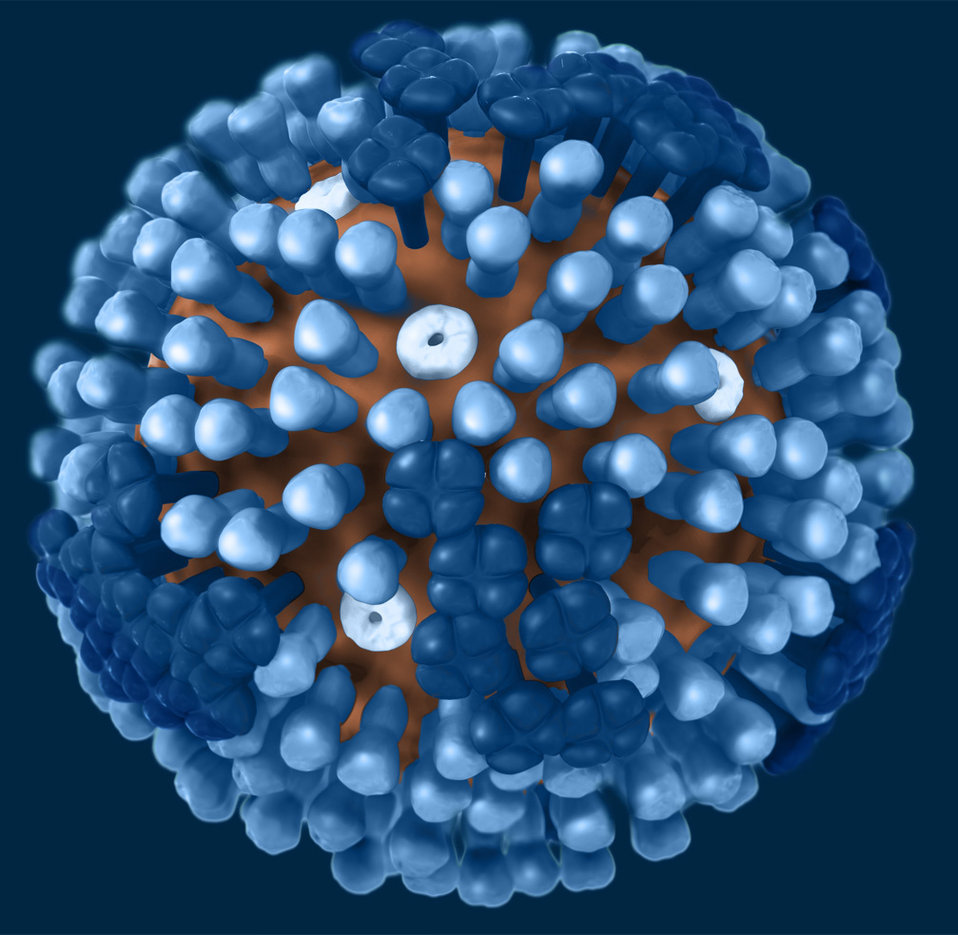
On a dark-blue background, this illustration provides a 3D graphical representation of a generic influenza virion's ultrastructure, and is not specific to a seasonal, avian or 2009 H1N1 virus. See PHIL 11878 for a cut-away view revealing the virion's interior, and PHIL 11879, which includes a key to the virion's protein constituents.